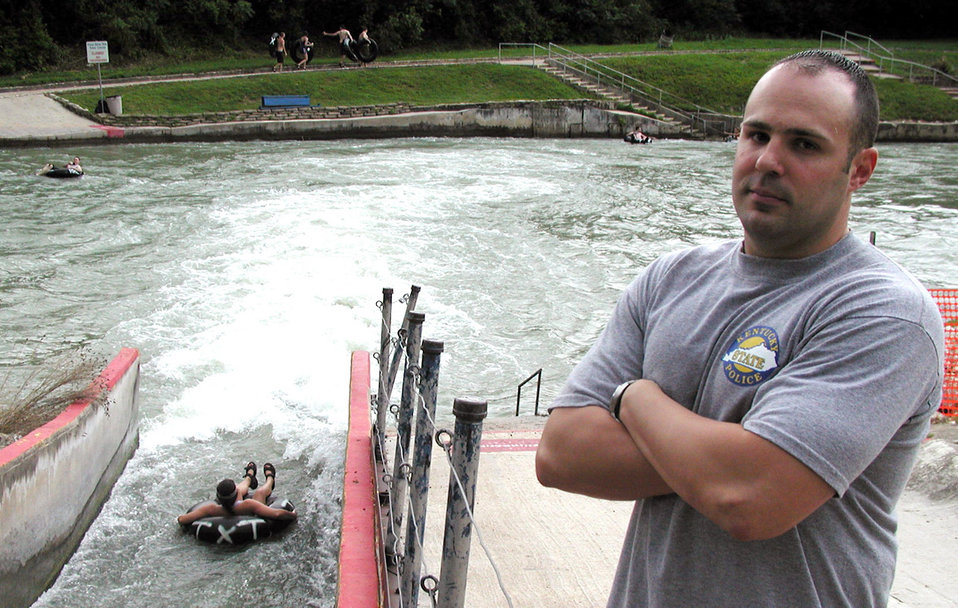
NCO rescues two people from river

NEW BRAUNFELS, Texas -- Staff Sgt. Boyd Myers revisits the river where he rescued a mother and daughter from its rapids. He is a Web applications developer at the Air Force Personnel Center at nearby Randolph Air Force Base.